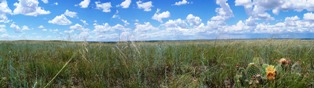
Panoramic View of Bowdoin National Wildlife Refuge

Panoramic photograph of Bowdoin National Wildlife Refuge. Native prairie in the foreground, Lake Bowdoin in the background, and big sky (what eastern Montana is known for).